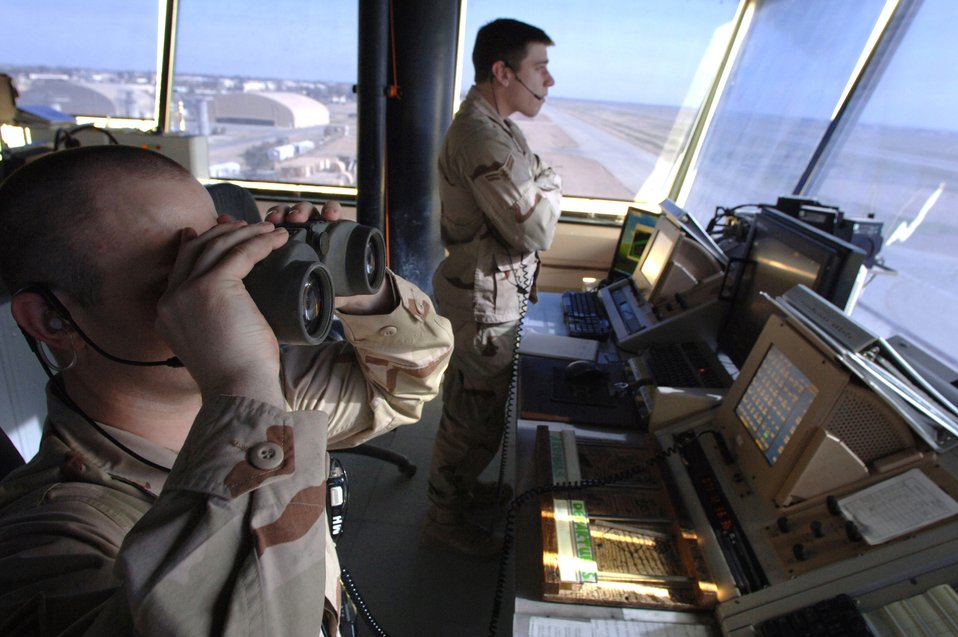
Operation Iraqi Freedom

BALAD AIR BASE, Iraq - Senior Airman Mathew Hooke, and Airman 1st Class Eric Woodward, 332nd Expeditionary Operational Support Squadron, Air Traffic Controllers use binoculars to locate an aircraft on the horizon Mar. 10, 2007. Balad Air traffic controllers comunicate with aircraft to ensure safe landings and takeoffs from the Balad tower.